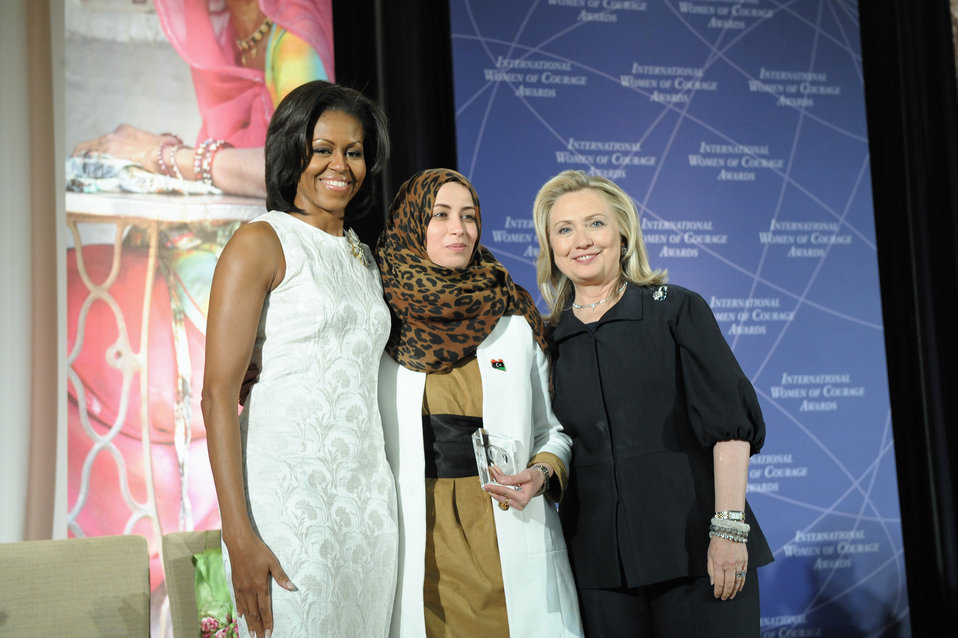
Secretary Clinton and First Lady Obama With 2012 IWOC Award Winner Hana El Hebshi of Libya

U.S. Secretary of State Hillary Rodham Clinton, right; and First Lady Michelle Obama, left; pose for a photo with 2012 International Women of Courage (IWOC) Award Winner Hana El Hebshi of Libya, at the U.S. Department of State in Washington, D.C., on March 8, 2012.